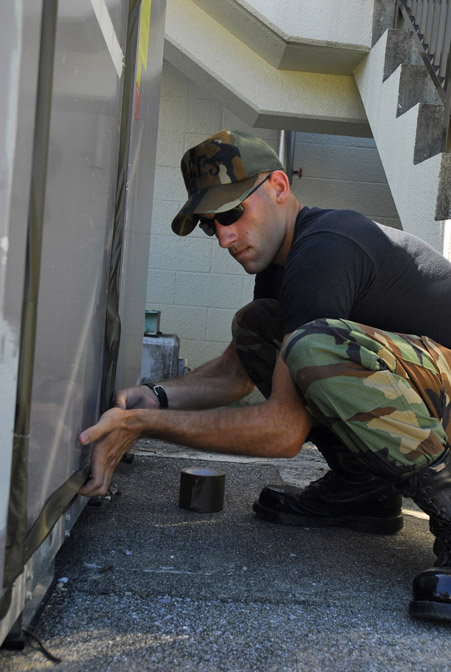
Kadena prepares for typhoon

Airman 1st Class Adam Culver secures the air condition unit with a duck tape to prevent leaks in the control panel in preparation for Typhoon Man-Yi July 11 at Kadena Air Base, Japan. Typhoon Man-Yi, the first typhoon of the year for Okinawa, is expected to hit Okinawa July 13. Airman Culver is assigned to the 18th Civil Engineer Squadron.